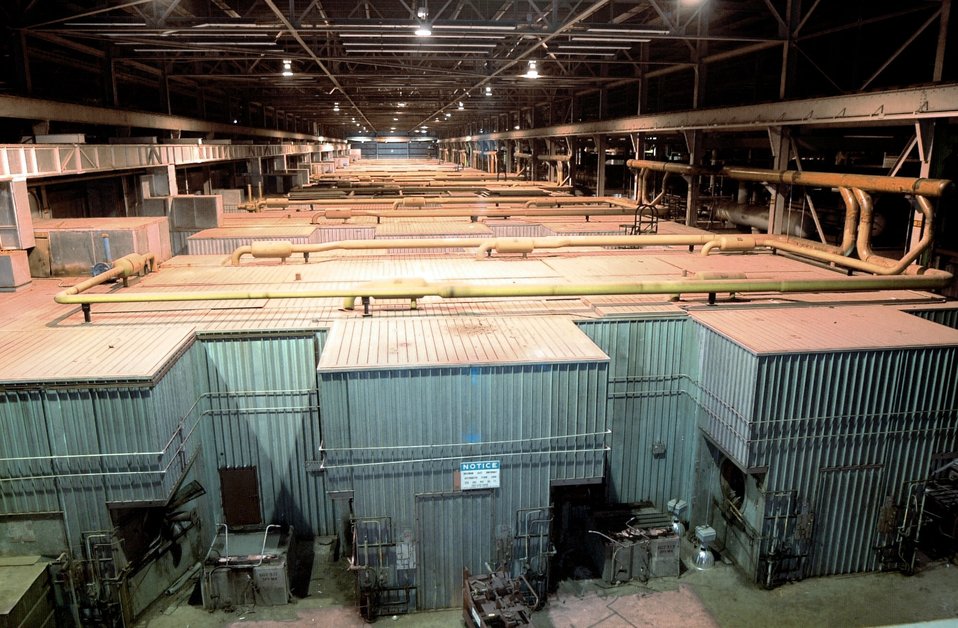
K-31 Before (Oak Ridge)